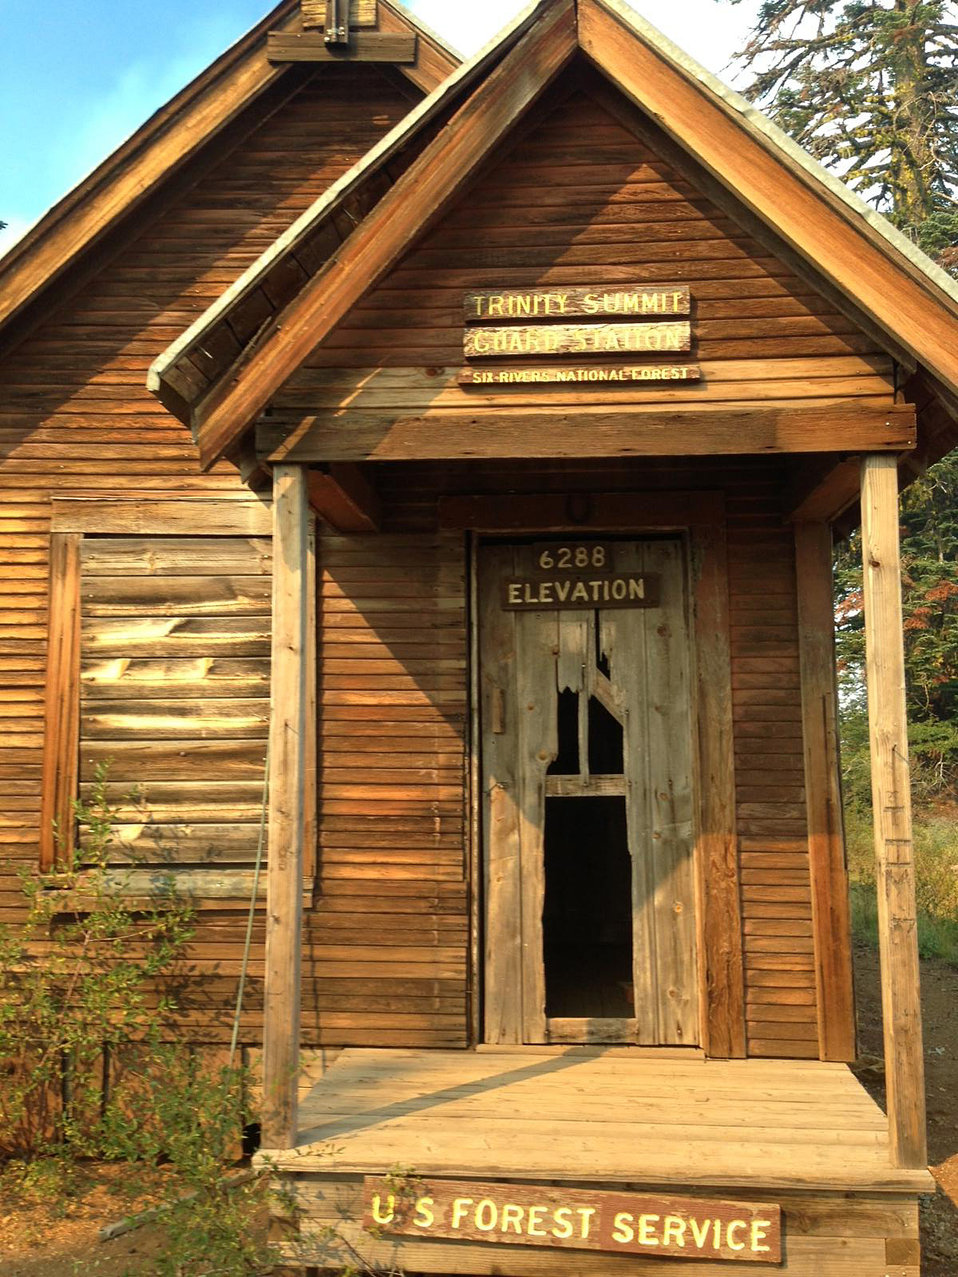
The Corral Complex Fire threatens the historic Trinity Summit Guard Station at Six Rivers National Forest. The Corral Complex Fire in the Six Rivers National Forest near the Trinity Alps Wilderness area in California began on Aug. 10, 2013 by lightning and has consumed approximately 4, 450 acres.